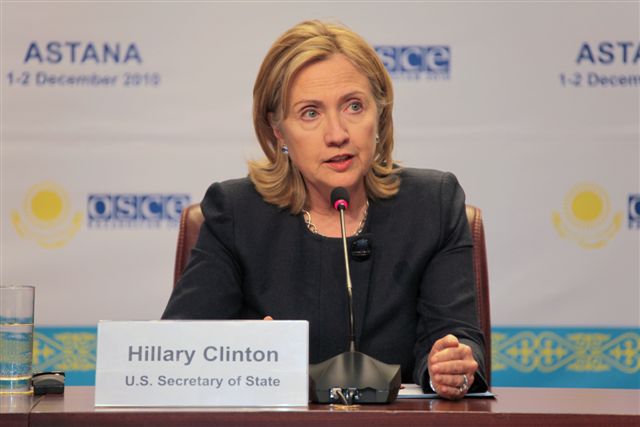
Secretary Clinton Speaks at the OSCE Summit Plenary

U.S. Secretary of State Hillary Rodham Clinton speaks at the OSCE Summit Plenary Session, in Astana, Kazakhstan, on December 1, 2010.